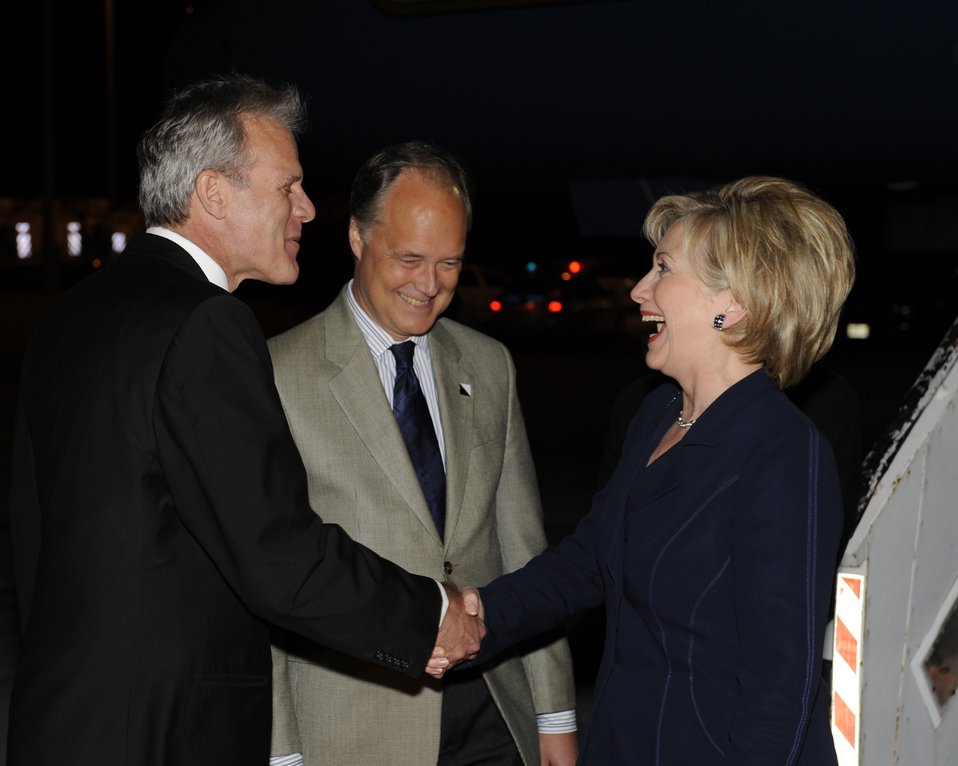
Secretary Clinton Arrives in Jersalem

U.S. Secretary of State Hillary Rodham Clinton is greeted by U.S. Ambassador to Israel James B. Cunningham and Israeli officials upon arrival to Israel October 31, 2009.